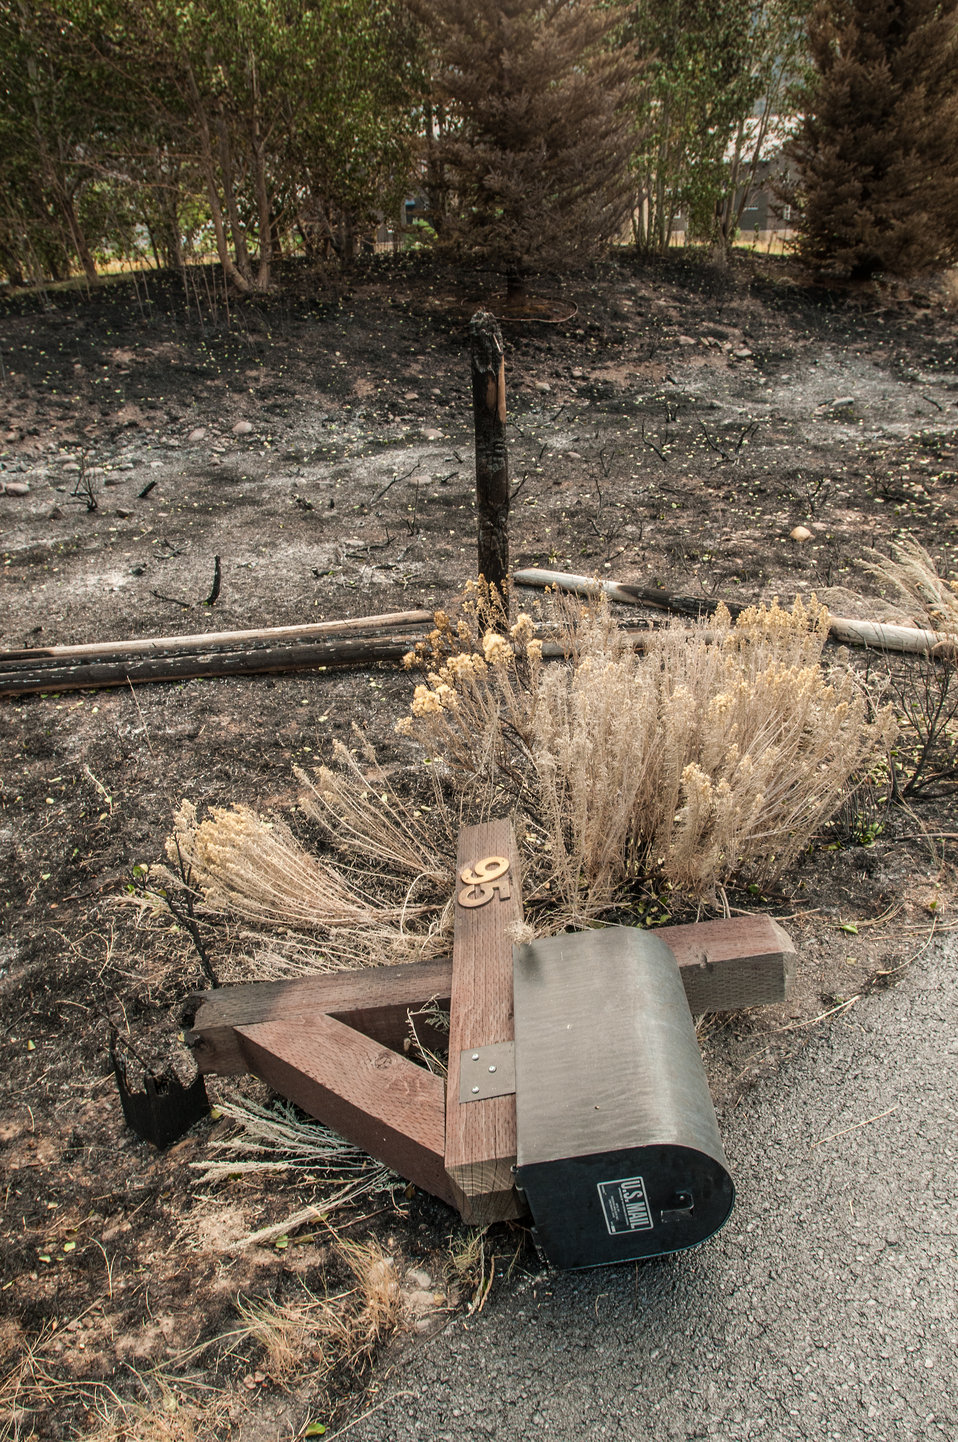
Thanks to the efforts of Wildland Firefighters, support crews and other first responders, homes and residential communities were (with few exception) saved from major damage, from the Beaver Creek Fire, near Hailey, ID, in the interface of U.S. Department of Agriculture (USDA) Forest Service (FS) and Sawtooth National Forest and Bureau of Land Management (BLM) lands, on Wednesday, Aug 21, 2013. In this community, major sections of hillside were charred, some suffered burnt trees, grass lands and fences.